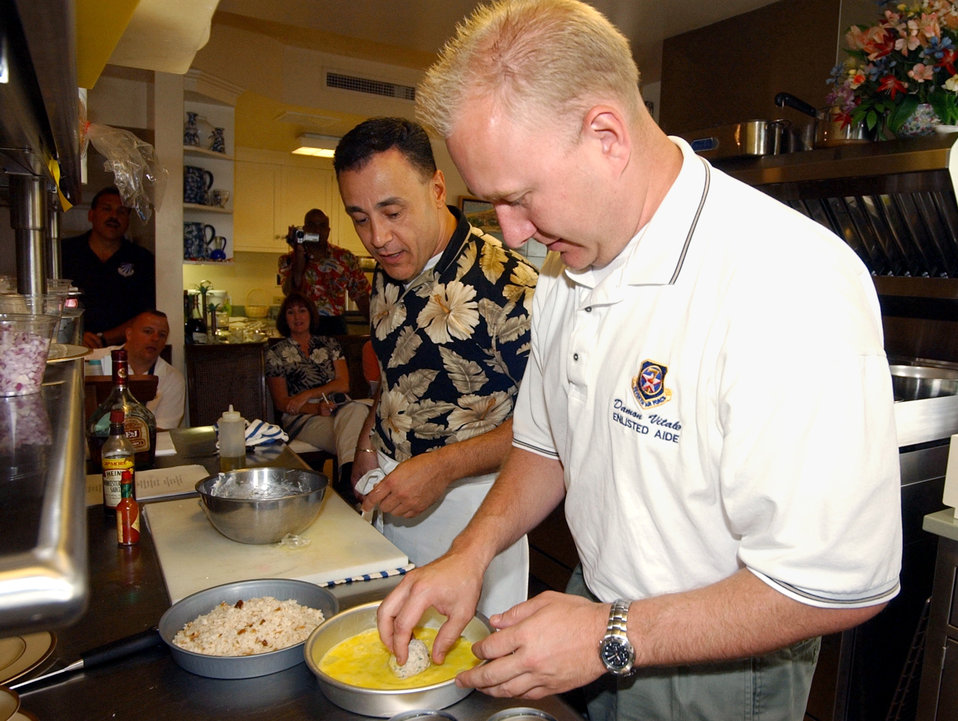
Chef training

PEARL HARBOR, Hawaii -- Staff Sgt. Damon Vitale learns how to make crab cakes from Navy Master Chief Petty Officer Ricardo Comba. Vitale is the enlisted aide to the 7th Air Force commander. He is one of about 90 Air Force enlisted aides serving around the world.